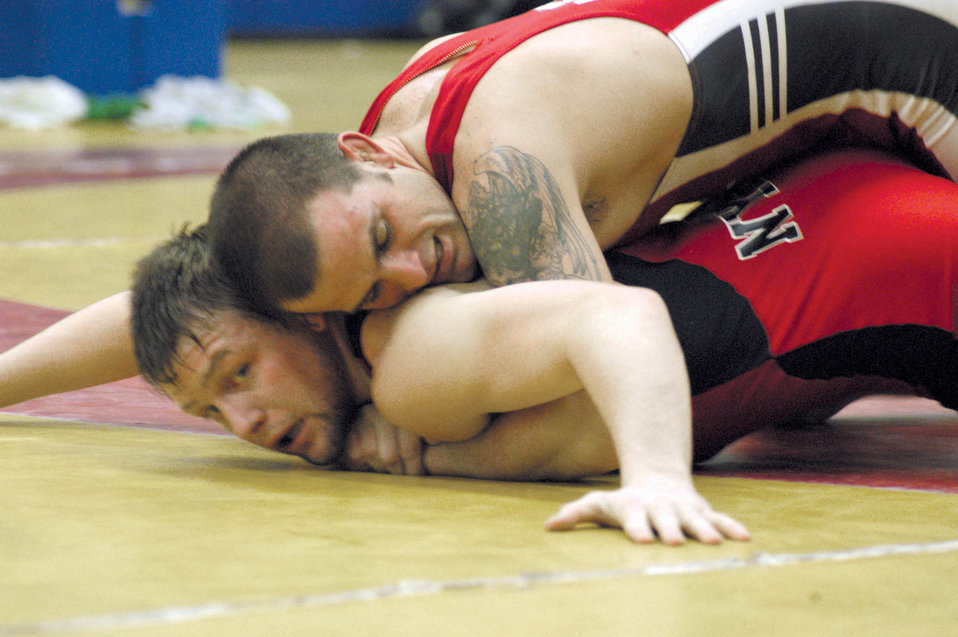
Taking the point

COLORADO SPRINGS Colo. -- Jacob Hey tries to score a point on Joe Warren during a wrestling practice session at the Olympic Training Center here recently. Hey is a Greco-Roman wrestler and member of the All-Air Force Wrestling Team. He is vying for a spot on the 2004 U.S. Olympic team. Warren represents the New York Athletic Club.